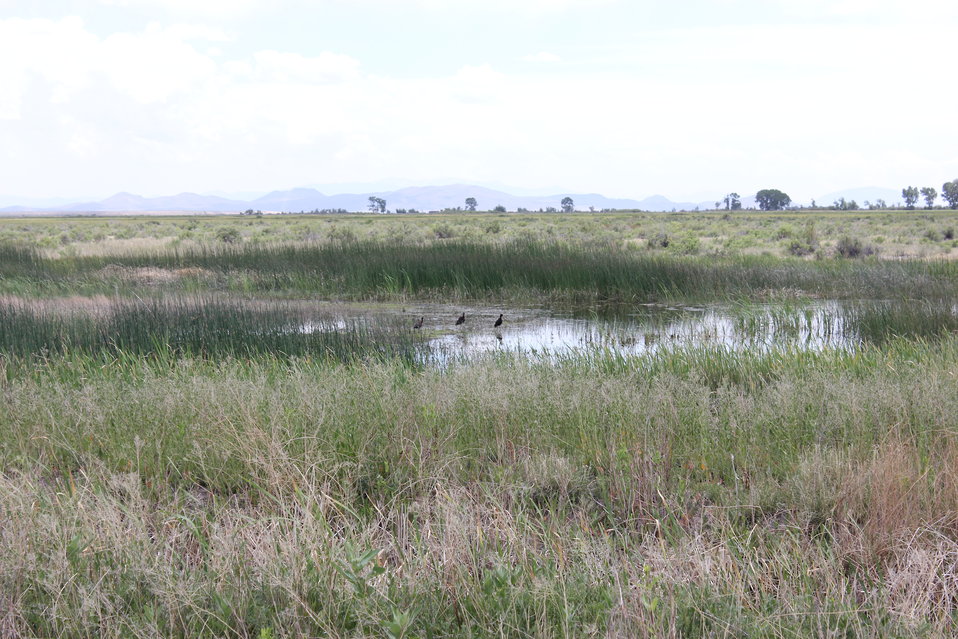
White-faced Ibis on Wetlands